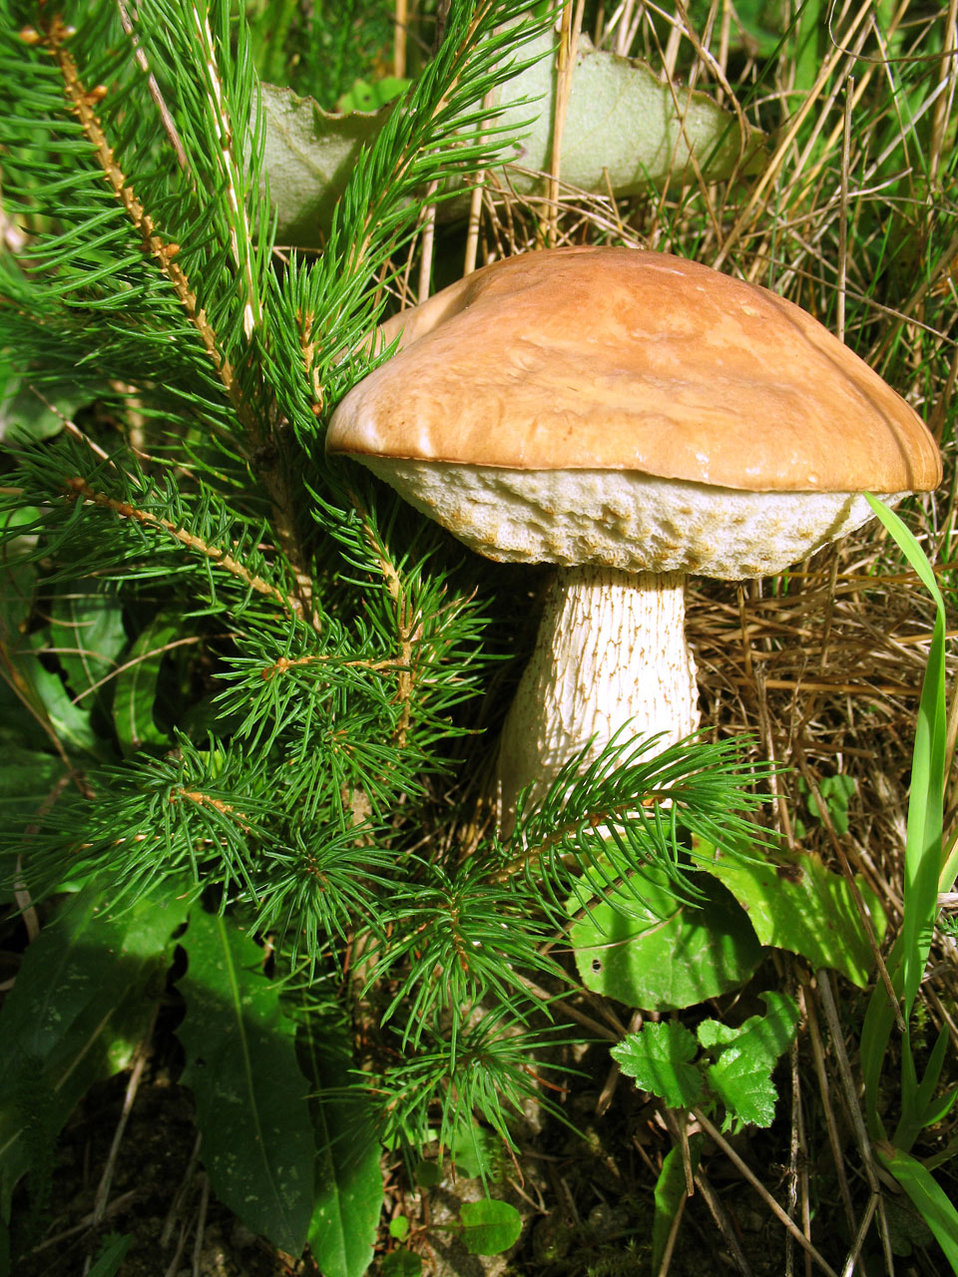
Wild mushroom

A close up image of the wild mushroom on the bank.